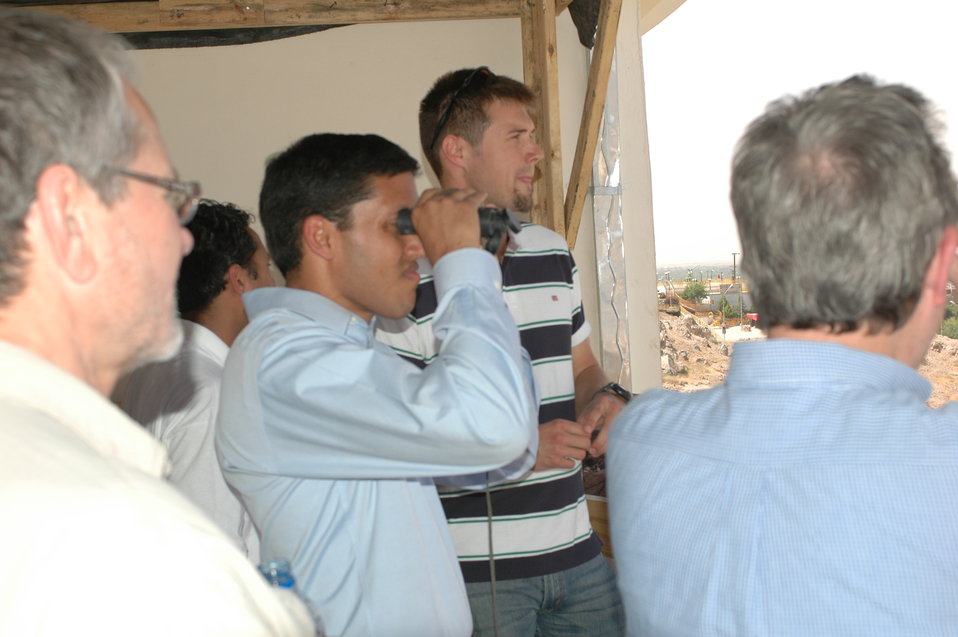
Dr Shah Visits Kandahar April 9, 2010